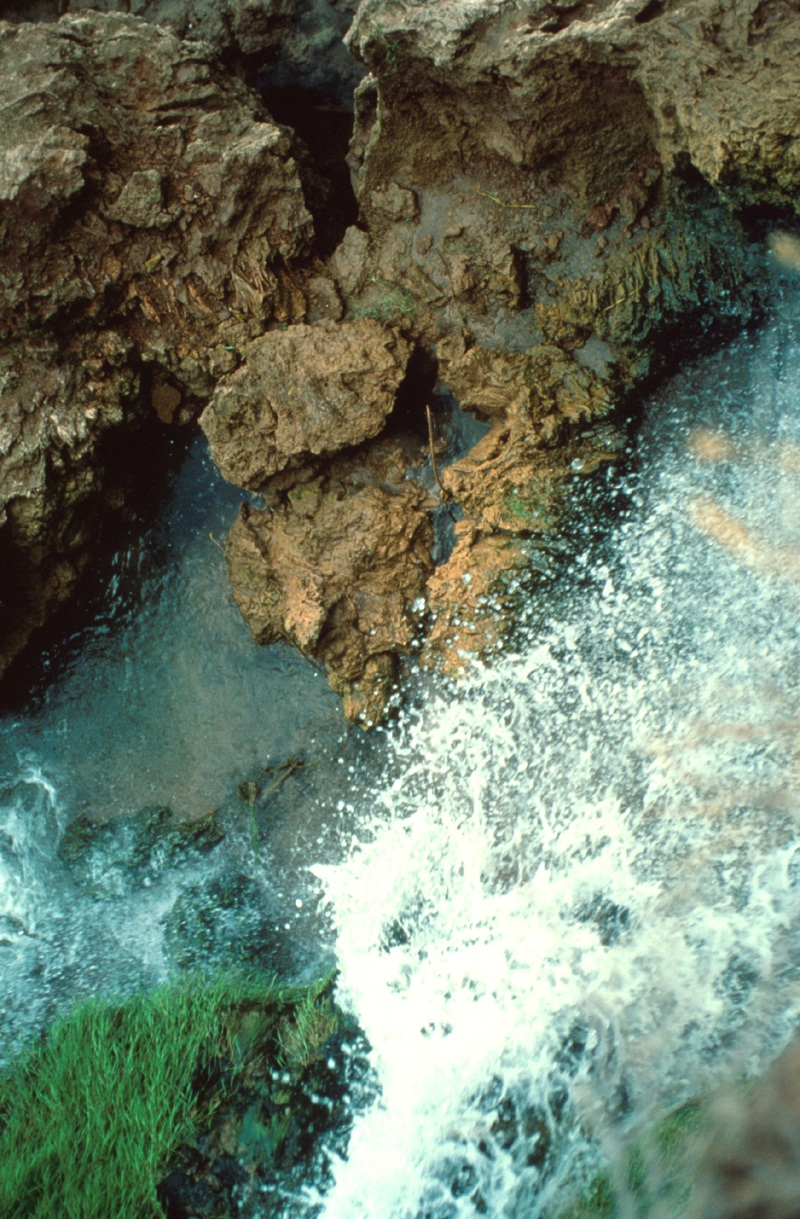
Fall Creek Falls Snake River Canyon